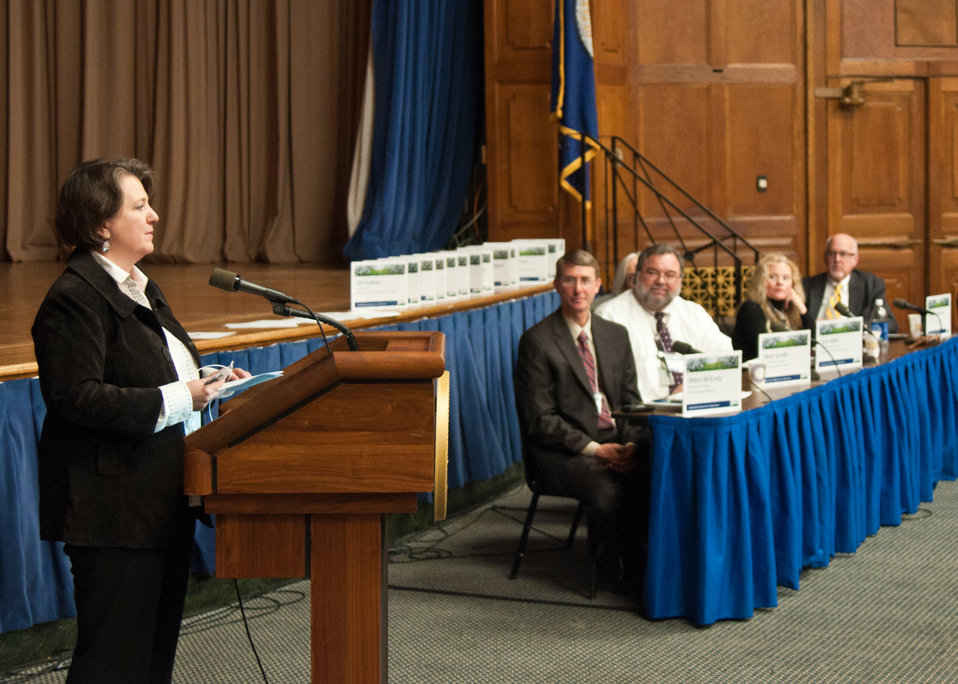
Deputy Agriculture Secretary Kathleen Merrigan addresses stakeholders and members of the public during the USDA Activities and Priorities Related to Organic Agriculture and Markets Public Listening Session held at the U.S. Department of Agriculture, in Washington DC, Tuesday, September 20, 2011. The purpose of the event was to gain the perspective of stakeholders and members of the public, important tools to help USDA Programs examine and prioritize their activities and objectives in order to best serve the organic community. To Secretary Merrigans’ left are: Miles McEvoy, Deputy Administrator, National Organic Program, Steven Smith, National Program Leader, National Institute of Food and Agriculture, Heather Velthius, Foreign Agriculture Service and David Shipman, Acting Administrator, Agricultural marketing Service.